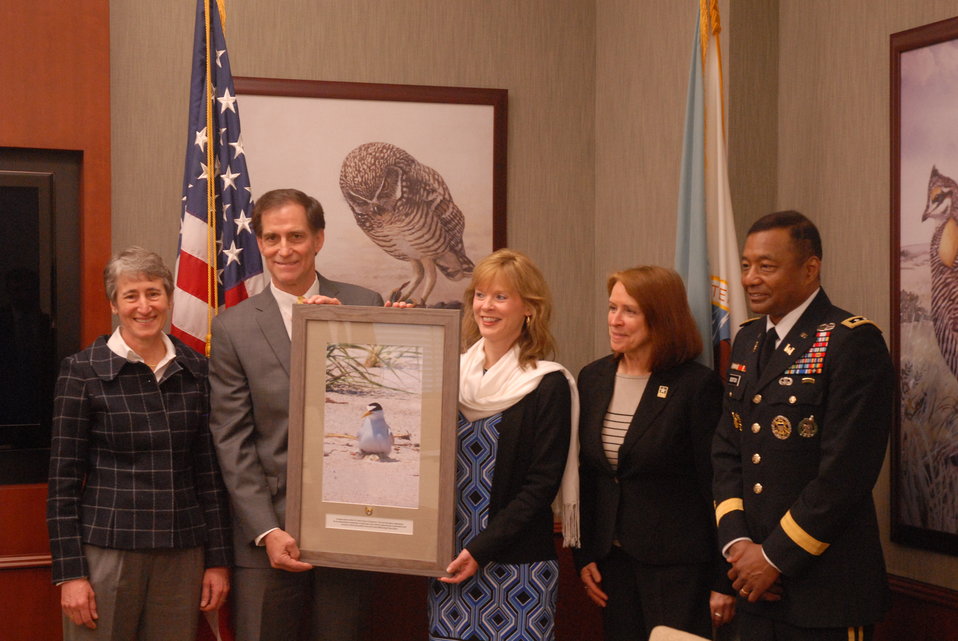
Hi Res -DOI-FWS-Corps2

Secretary of the Interior Sally Jewell, U.S. Fish and Wildlife Service director Dan Ashe recognize Beth Fleming, Director of the Corps’ Environmental Laboratory,Assistant Secretary of the Army for Civil Works Jo-Ellen Darcy, and U.S. Army Corps of Engineers commanding general Lt. Gen. Thomas P. Bostick for an innovative landscape-level conservation approach. (Shown: Commemorative photo with plaque of Interior least tern with chick on nest) Photo by Gavin Shire, USFWS (public domain photo) (High res)